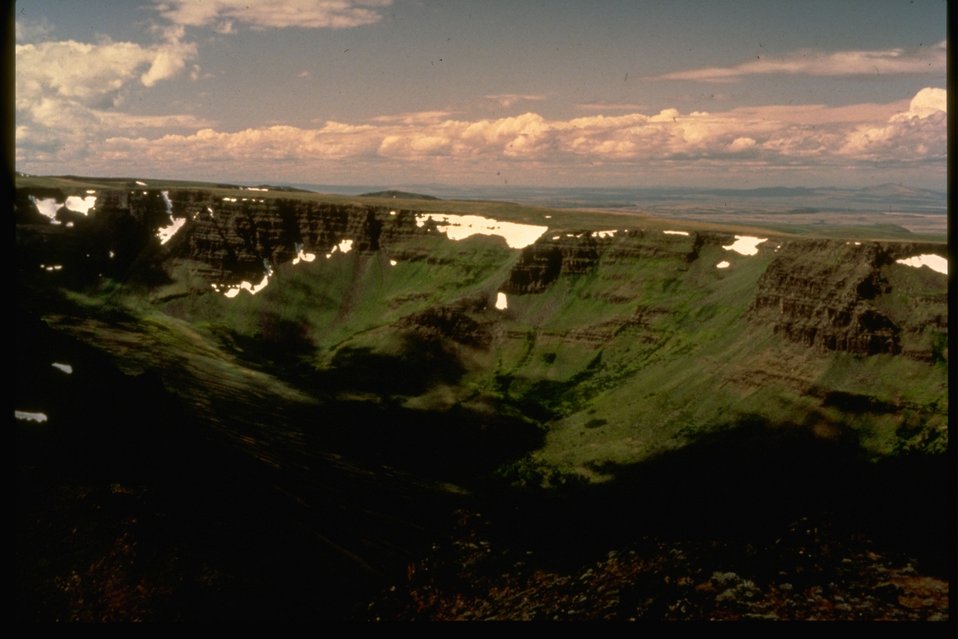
Aerial of Steens Mountain and one of the gorges.